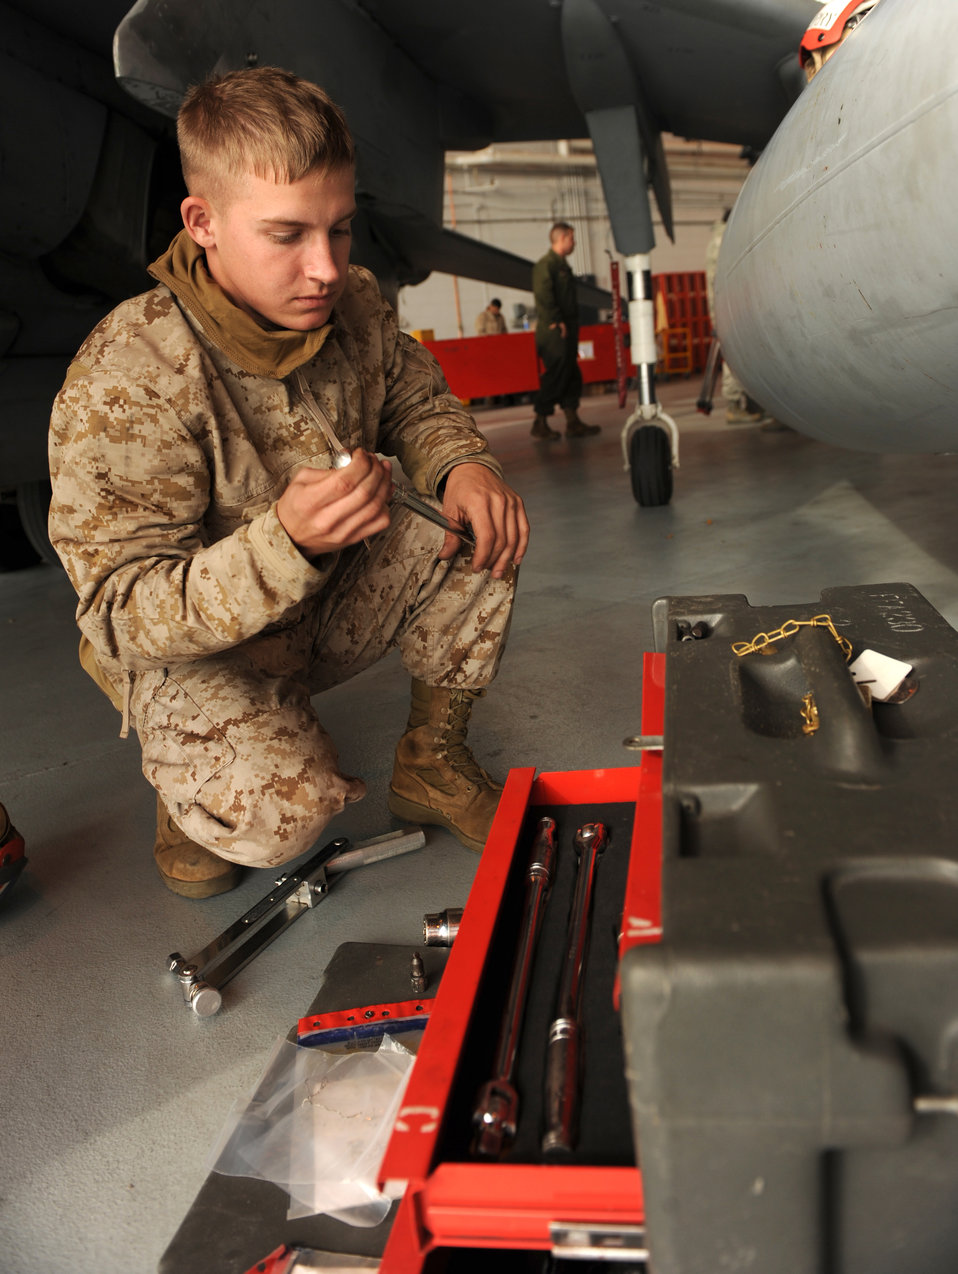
Exercise Mountain Roundup

Cpl. Jason Fowler, a Marine Attack Squadron 542 ordnance technician from Cherry Point, N.C., takes a wrench from a tool box to fix a fuel leak on an AV-8B Harrier II Oct. 21, 2009, during the Mountain Roundup exercise at Mountain Home Air Force Base, Idaho. Mountain Roundup is a large-force exercise running from Oct. 15 through Oct. 30 and includes participants from the German air force, U.S. Air Force, U.S. Navy and U.S. Marines.